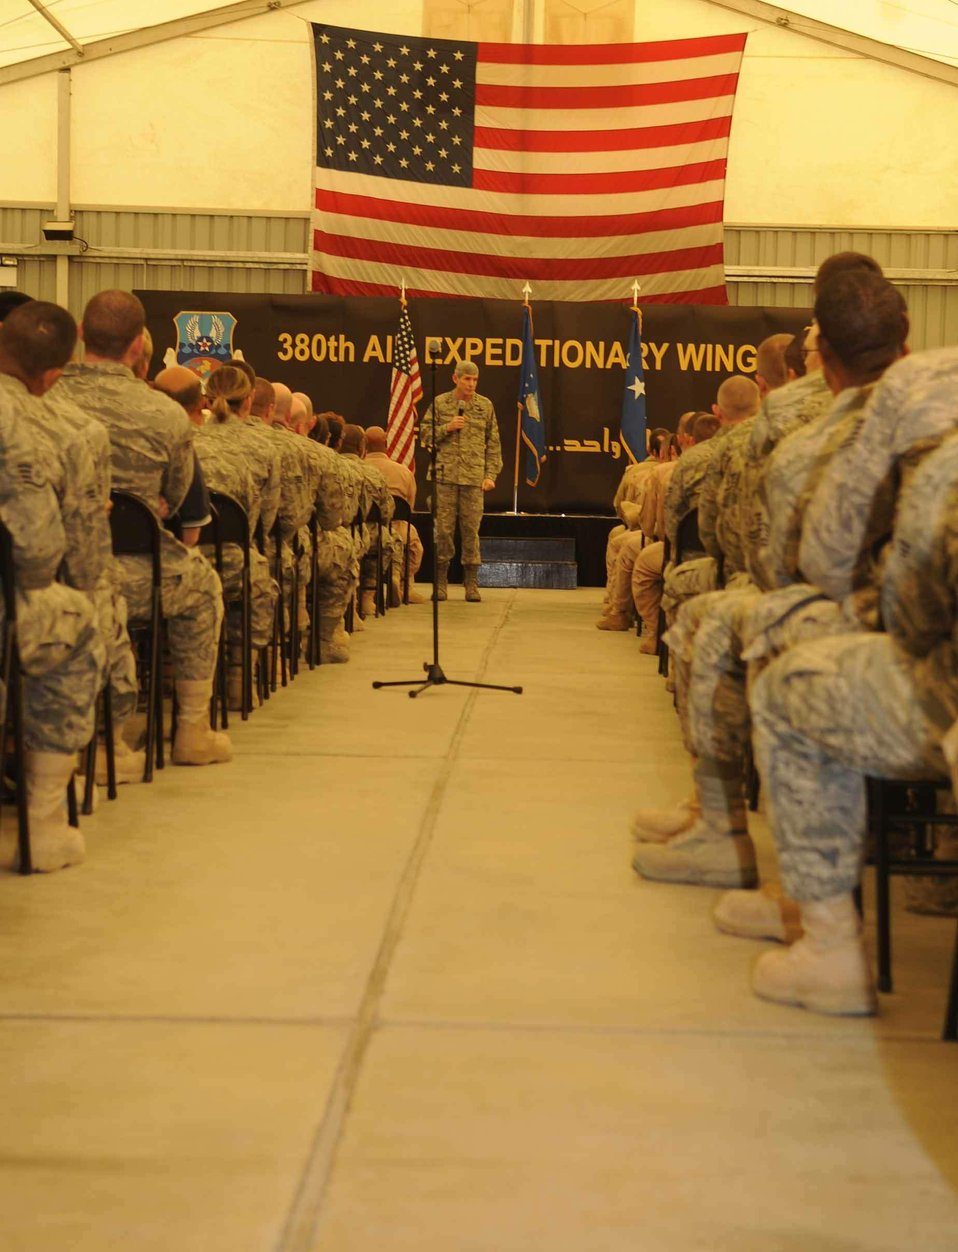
Chief of staff: Play your positions credibly

Air Force Chief of Staff Gen. Norton Schwartz speaks to Airmen of the 380th Air Expeditionary Wing Nov. 13, 2009, at an air base in Southwest Asia.